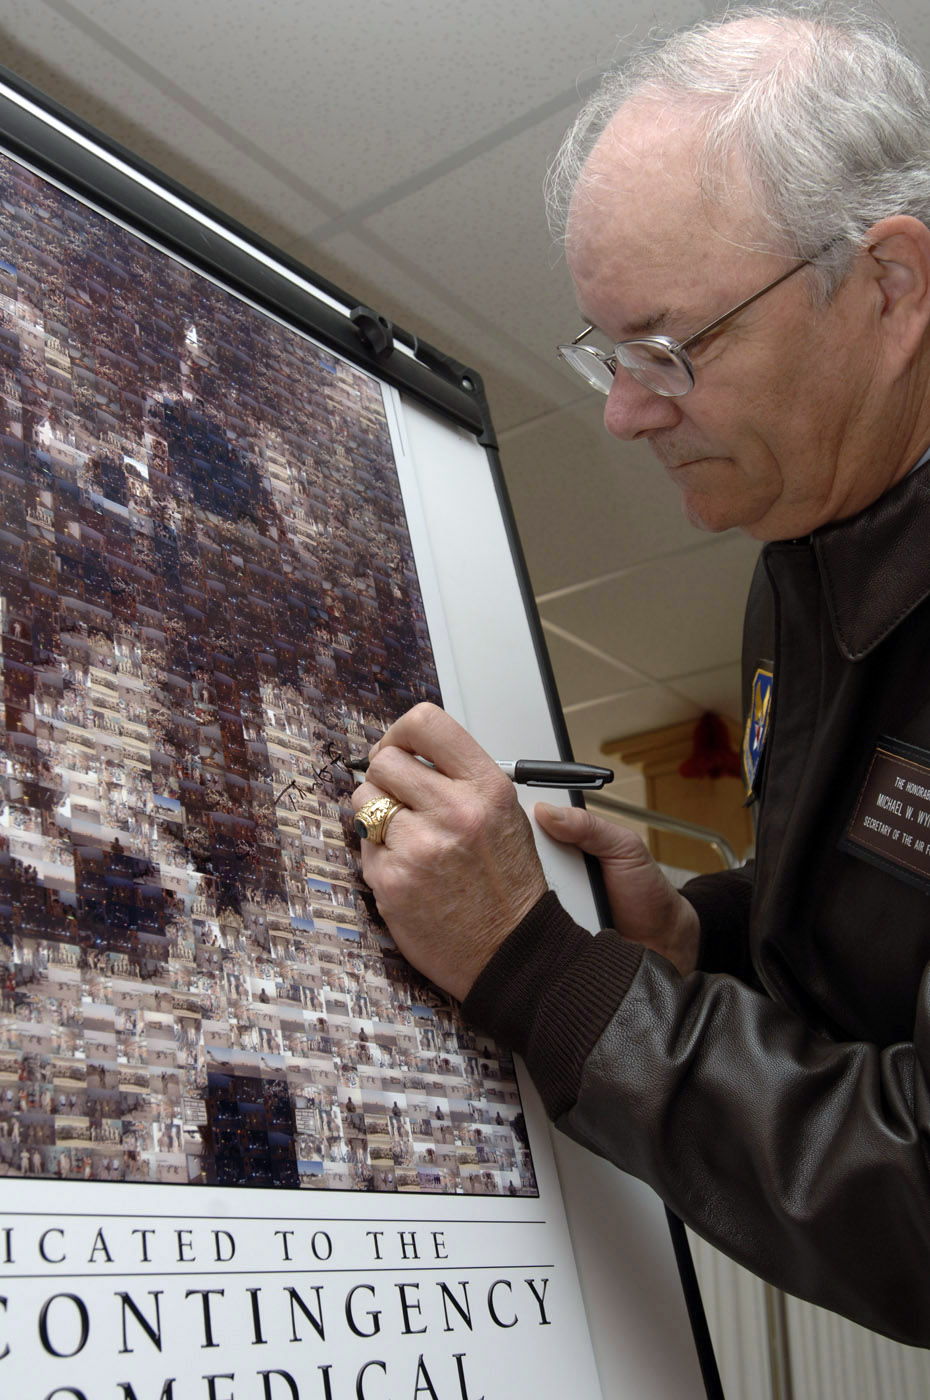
Staging facility opens

BALAD AIR BASE, Iraq (AFPN) -- Secretary of the Air Force Michael Wynne signs a poster at the Contingency Aeromedical Staging Facility after a ribbon cutting ceremony during a Balad visit.